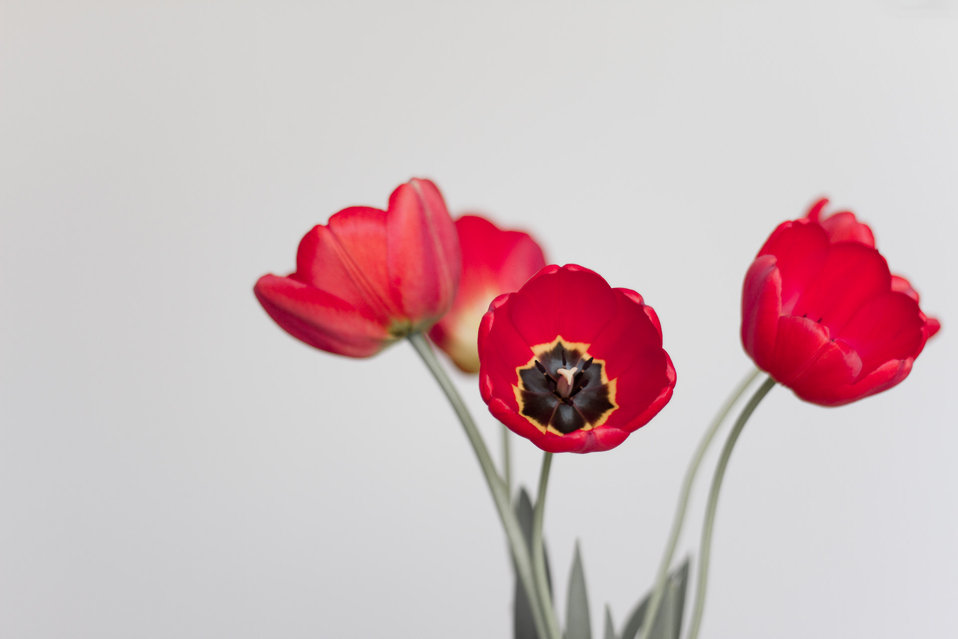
Red tulips in vase.